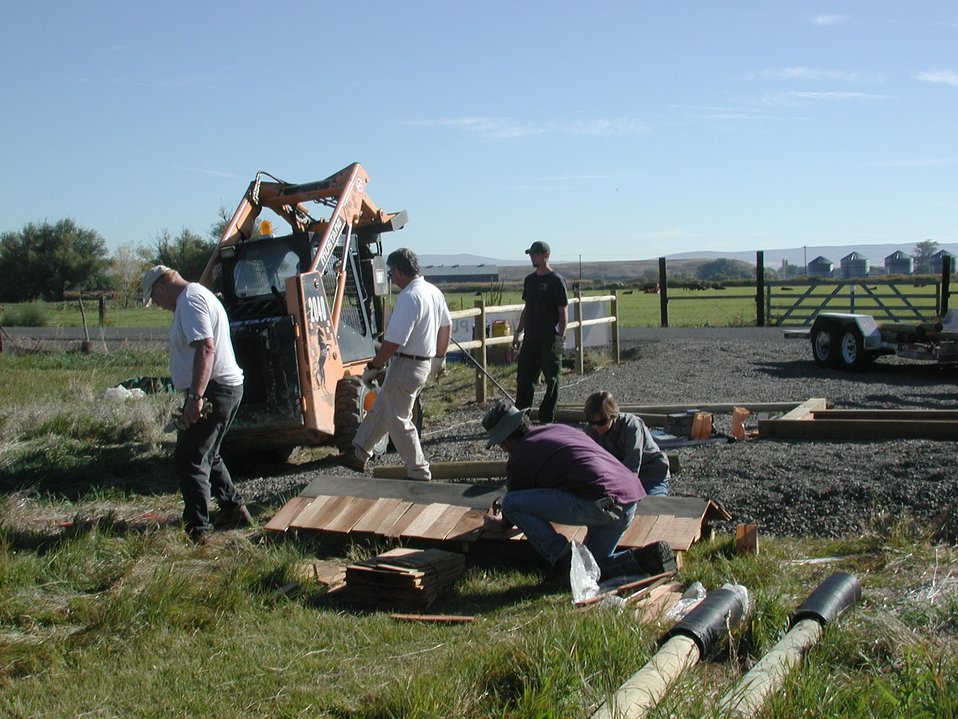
Wenatchee Field Office's Nationa Public Lands Day where volunteers built a wooden fence, installed vehicle barriers, and consturcted an information kiosk.